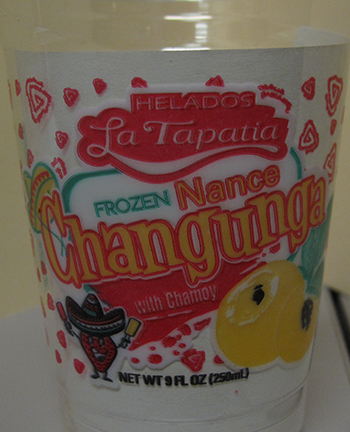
RECALLED – Ice cream products

March 19, 2014 – Product Recall – Helados La Tapatia, Inc. Recalls Products Because of Possible Health Risk.